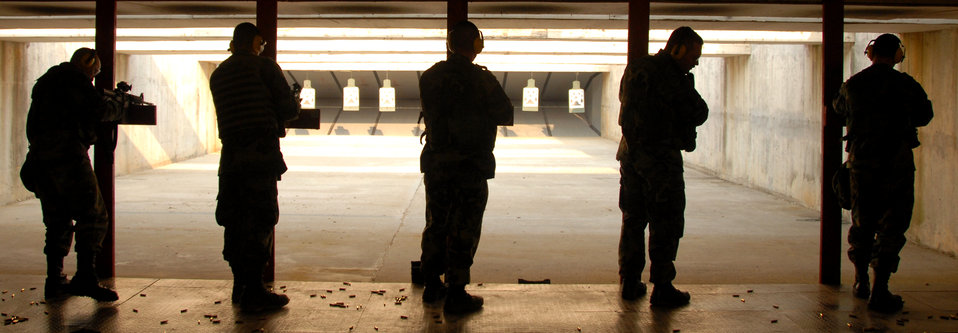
Keep firing

Airmen test their skills at the Osan Air Base, South Korea, shooting range March 15. .